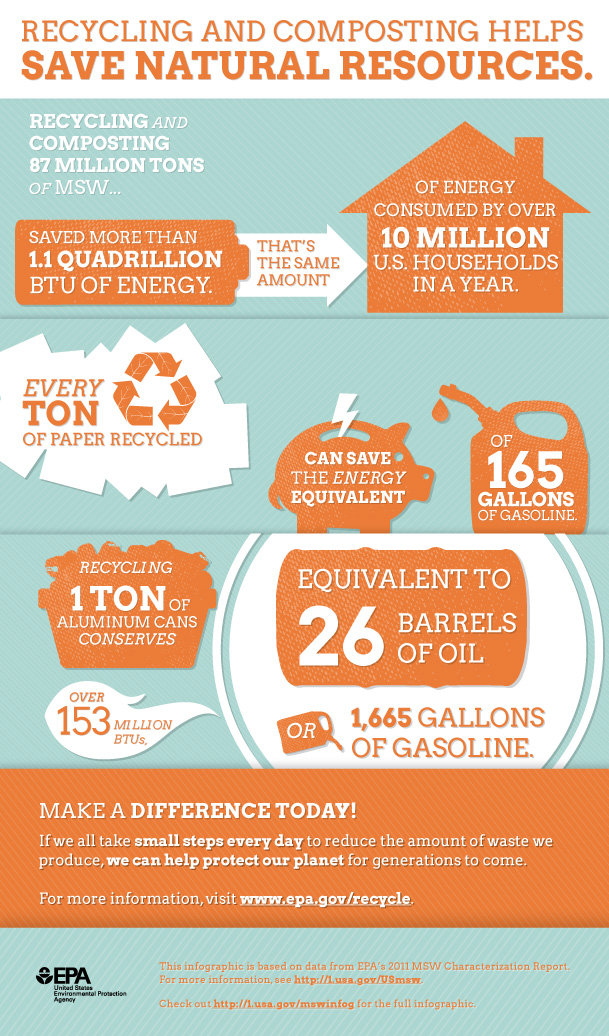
Recycling and Composting Helps Save Natural Resources

Everything we use goes through a life cycle, and each stage of the life cycle has environmental impacts and consumes energy. Recycling generally uses less energy than extracting and processing raw materials, so making new products from recycled materials can save energy.

Calculate your own energy savings from recycling: www.epa.gov/iwarm

Recycling data based on the full 2011 Municipal Solid Waste Characterization Report: go.usa.gov/bPxY